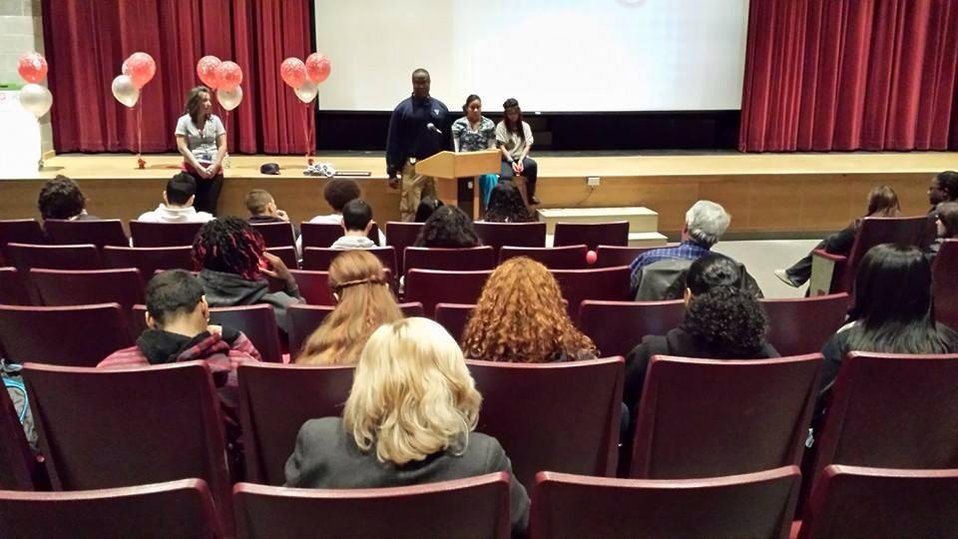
Mass. Teens Shattering the Myths

Fitchburg Community Action Team (FCAT) held an after school IQ challenge event as part of its participation in National Drug Facts Week. FCAT joins teens across the U.S. in week-long effort to shatter the myths on drugs Fitchburg, MA. — As part of the NDFW celebration, Fitchburg students hosted a presentation, designed by youth, for youth, to increase awareness of drugs and drug abuse.
Students held a special community assembly at Fitchburg High School.